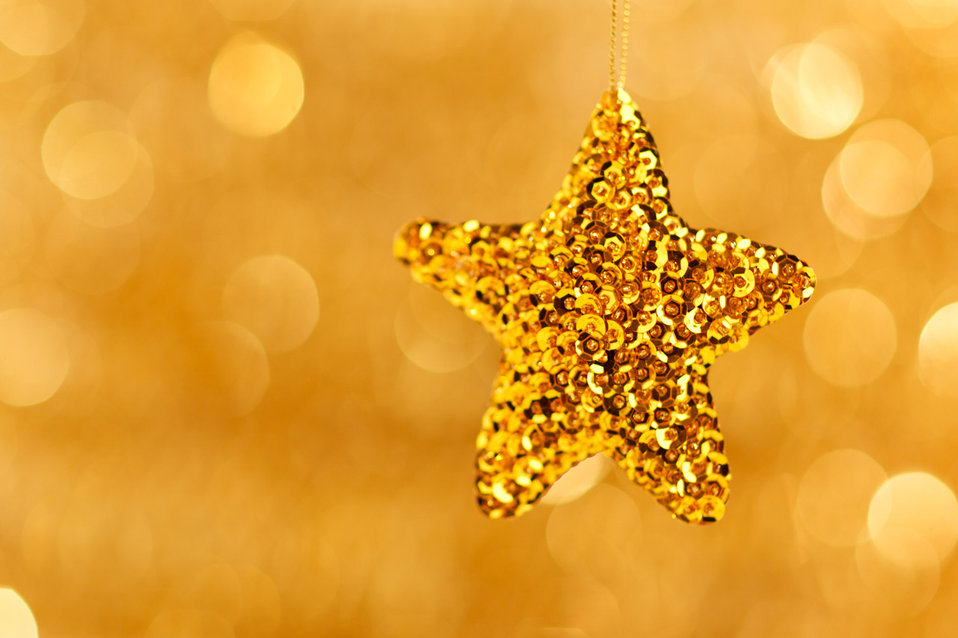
Golden star decoration on blurred golden background.